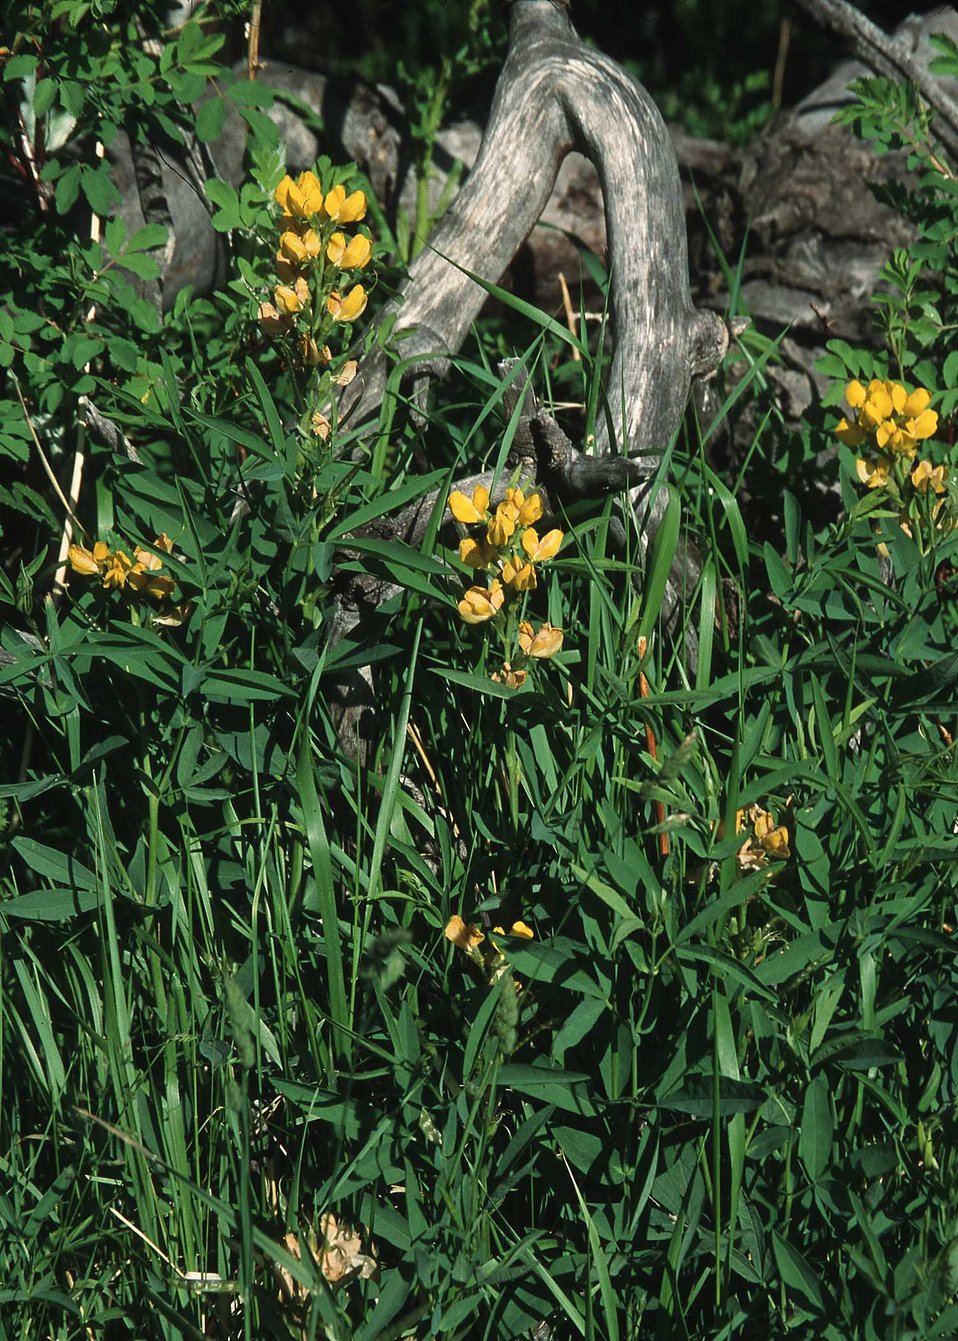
Yellow Lupine, CO.